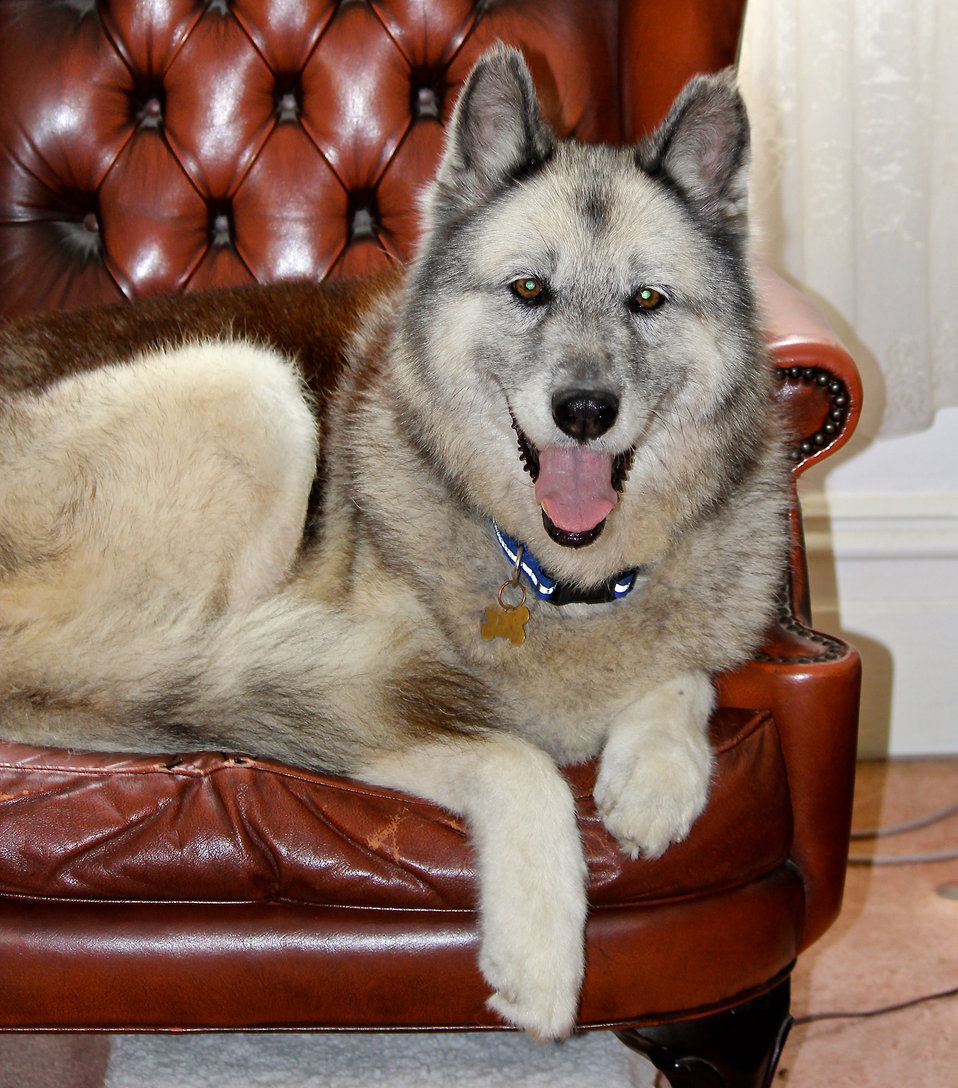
City dog

German shepherd x husky on a lounge chair.